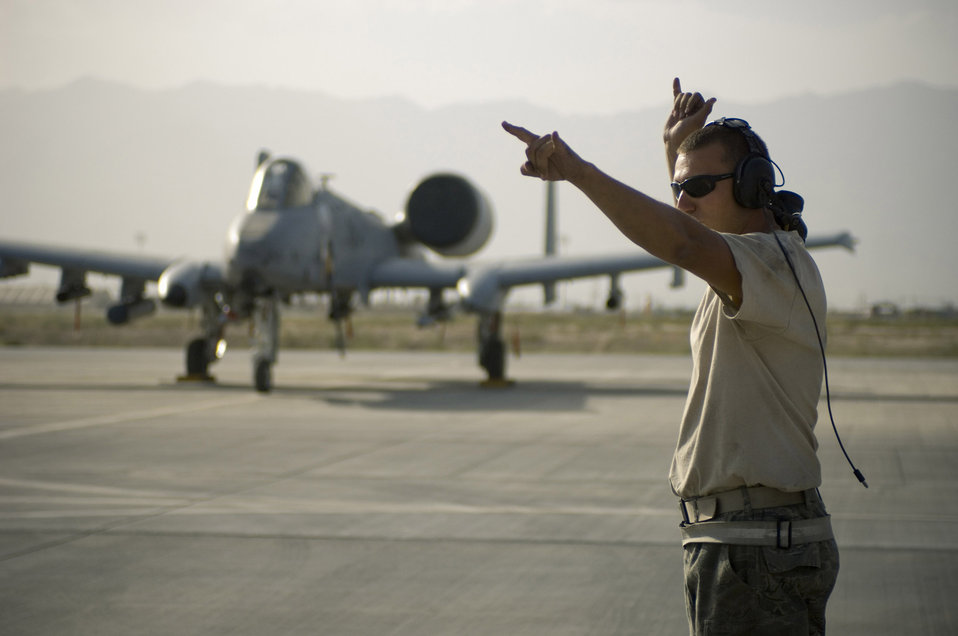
Air Power Summary

Staff Sgt. Kevin Bliem marshals an A-10 Thunderbolt II Sept. 12 at Bagram Airfield, Afghanistan. Sergeant Riem is a crew chief with the 455th Expeditionary Aircraft Maintenance Squadron.